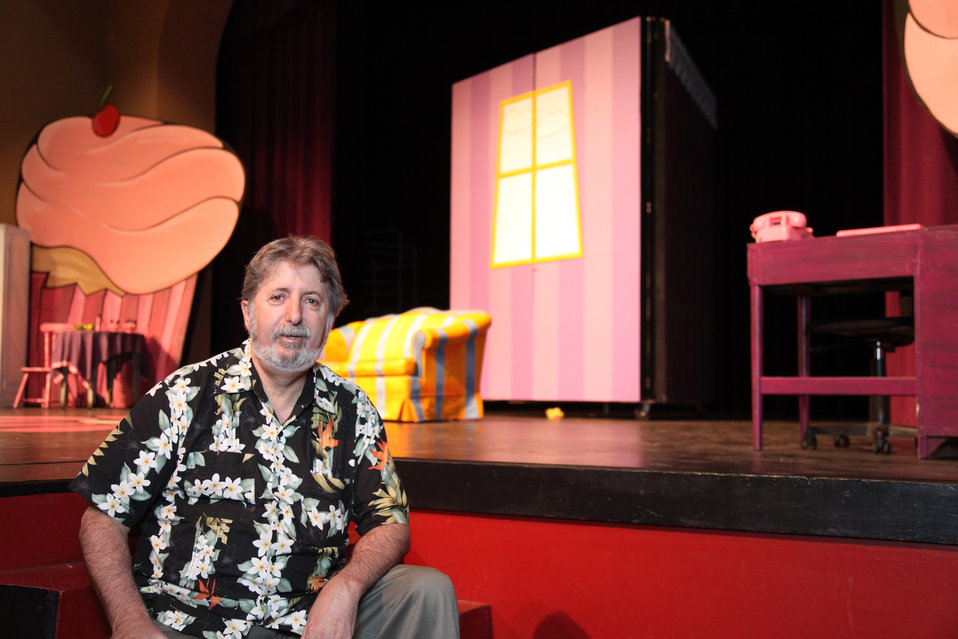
Magik Theatre

Richard Rosen, executive director of Magik Theatre, says that the lighting upgrades have saved money, but more importantly send a message of energy conservation to the students who visit. City Lights is saving the theatre an estimated 11,700 kilowatt-hours and $960 on electricity bills each year.